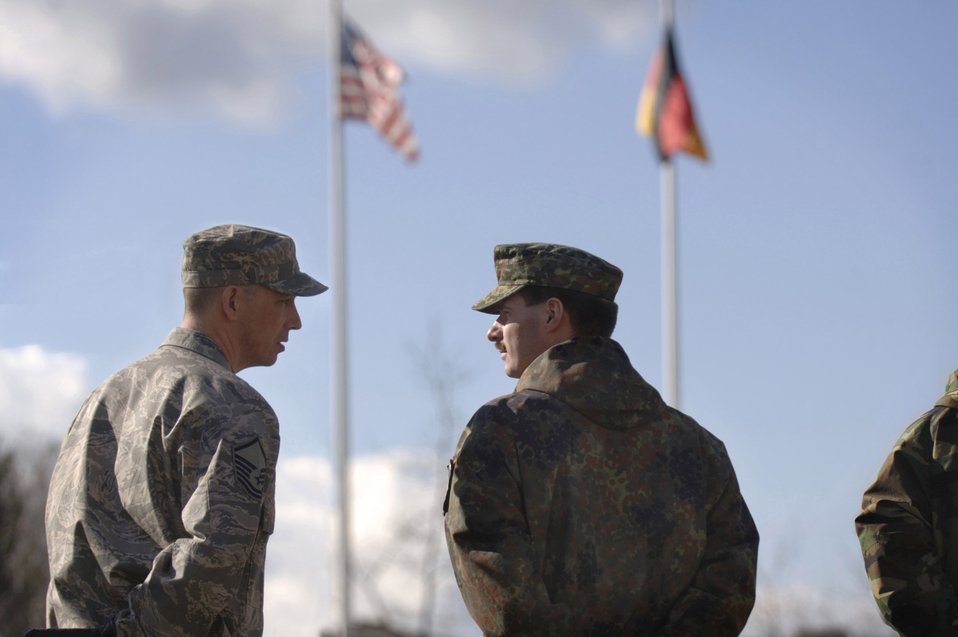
German sergeant enrolls in USAFE NCO Academy

German air force Master Sgt. Holger Fels talks with Master Sgt. Karcher Wild before observing a retreat ceremony March 26 at Kapaun Air Station, Germany. Sergeant Fels, a German NCO Academy instructor in Appen, Germany, voluntarily enrolled in the six-week academy course designed for U.S. Air Force technical sergeants to prepare for a four-year special duty assignment as an exchange instructor at the Senior NCO Academy at Maxwell Air Force Base, Ala. Sergeant Wild is a Kisling Noncommissioned Officer Academy instructor.